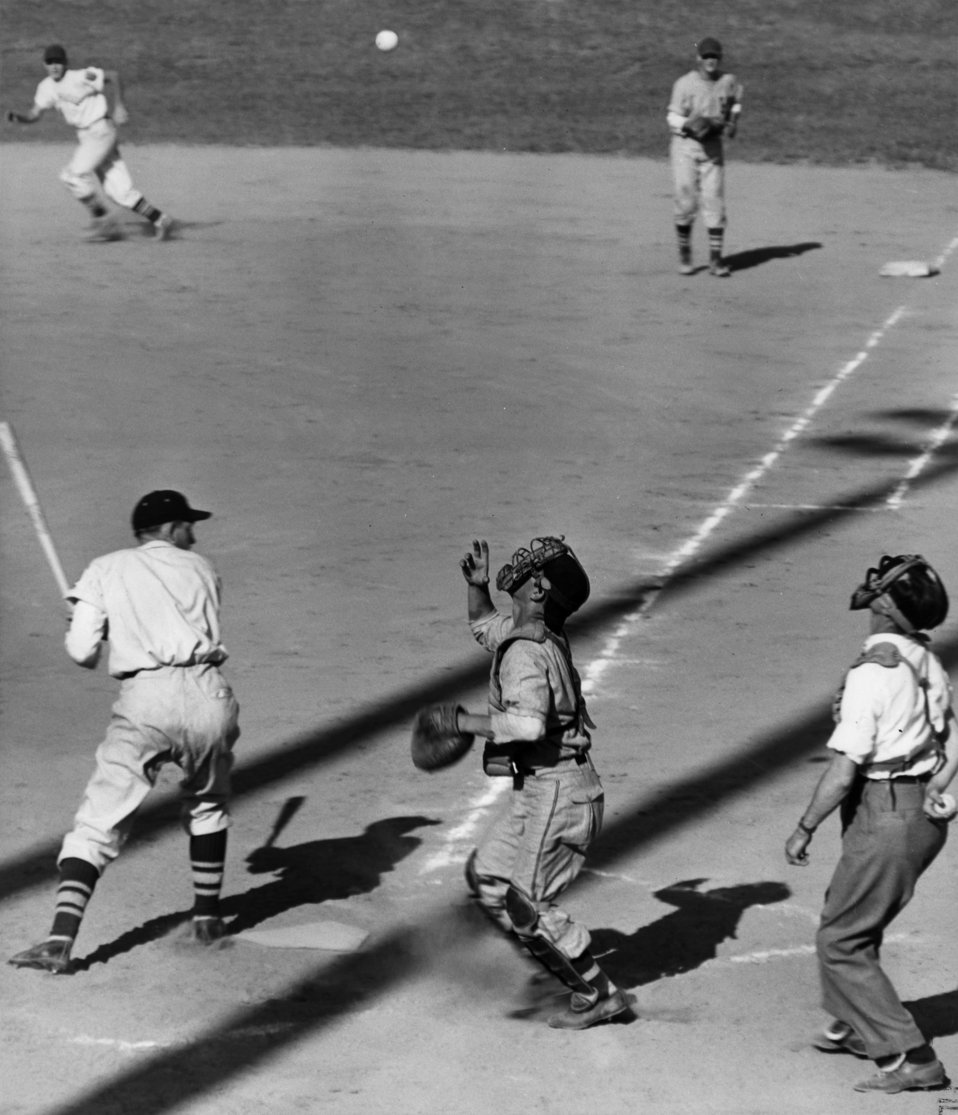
Baseball Game Oak Ridge

NO#4 DOE photo by Ed Westcott

Baseball Game Oak Ridge Tennessee 1945